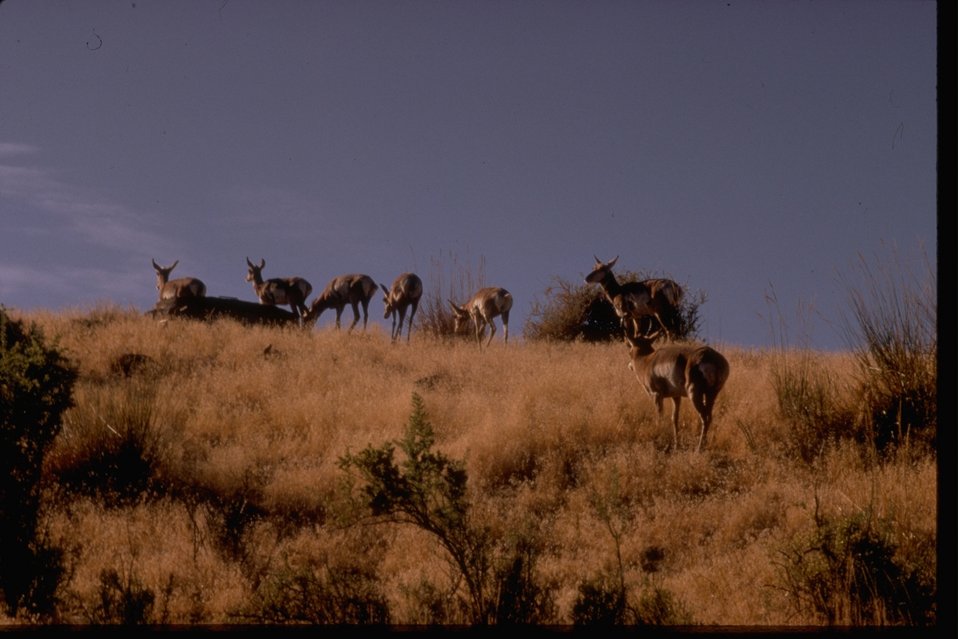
A herd of Prong Horn Antelope grazing.